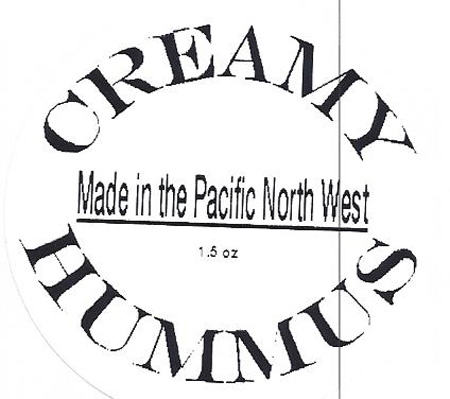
RECALLED – Hummus

July 16, 2013 – Product Recall – Hagee Foods Inc. dba Penny's Salsa Inc. Recalls Hummus Products Because of Possible Health Risk.